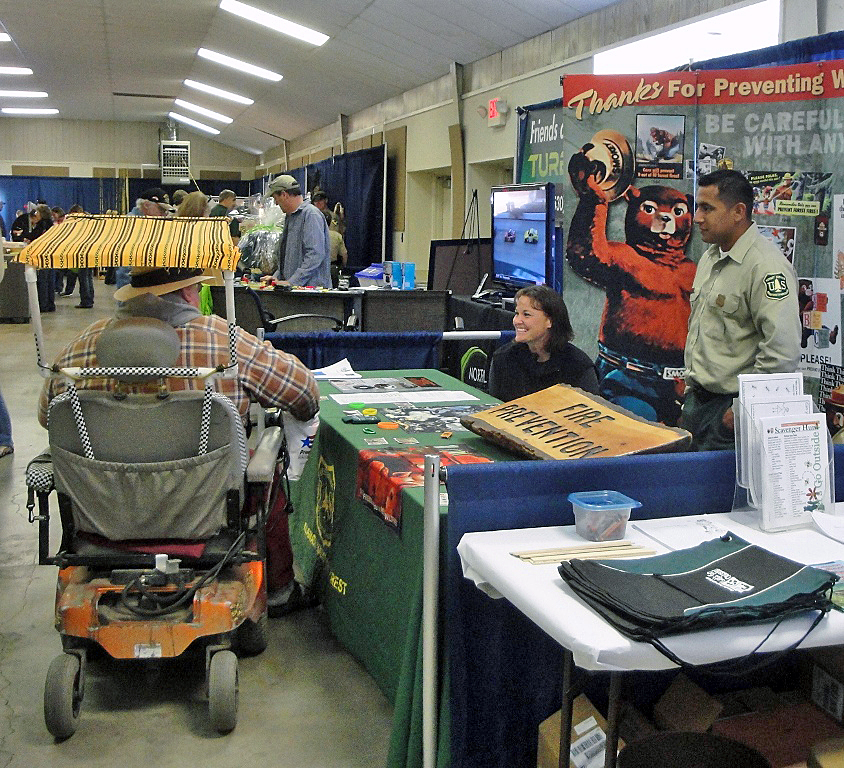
U.S. Department of Agriculture (USDA) Forest Service fire prevention specialist Jennifer Bray and firefighter apprentice Jesus Zepeda share important wildfire safety reminders to interested visitors at the annual Siskiyou County Sportsmen’s Expo in Yreka, CA on Mar. 17, 2013. The booth featured hands-on activities for children including skins, skulls, tracks and scat of local mammals, as well as interpretive handouts about habitat and species management.